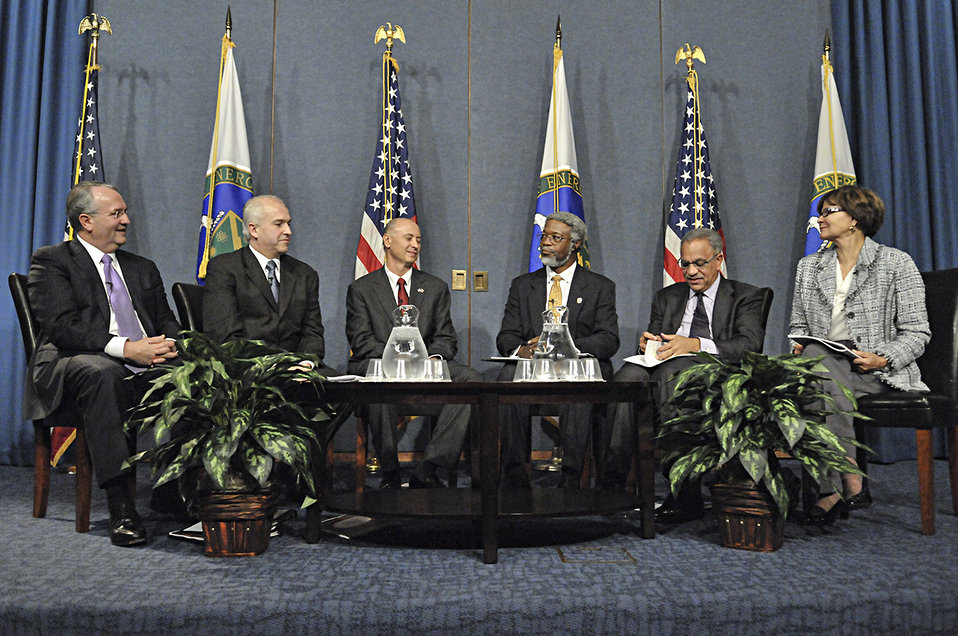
Panel: Increasing Minority Participation in the Energy Sector

Jack Gerard, CEO and President of American Petroleum Institute, Michael Rencheck, President and CEO of ARVEA Inc, Mauro Gregorio, President of DOW Chemical, Dr. S. James Gates, Professor at the University of Maryland, Dr. Sidney Ribeau, President of Howard University, and the Honorable Hazel O'Leary, former Secretary of Energy, gather for the first panel.